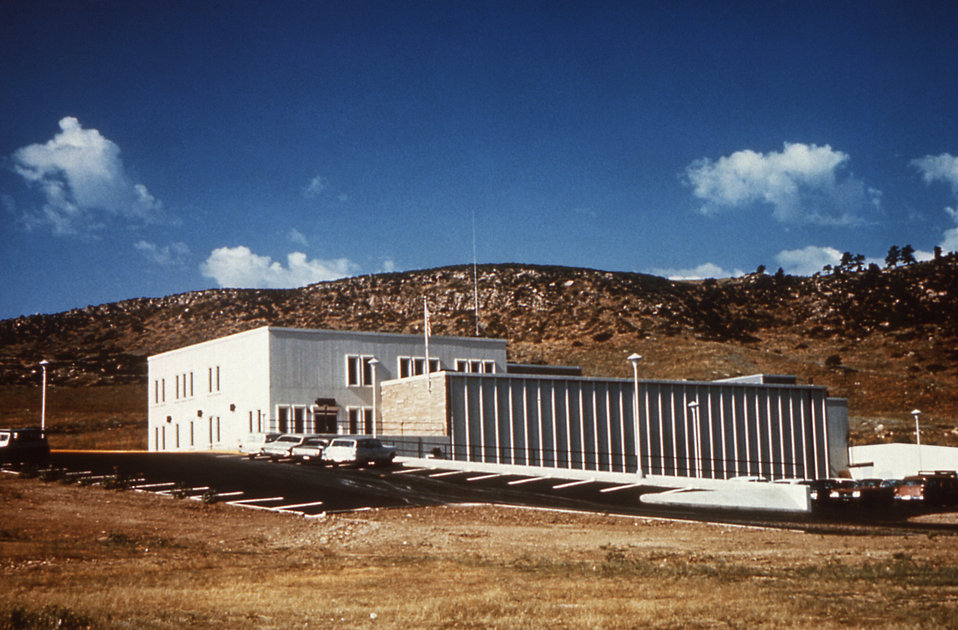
This 1979 image depicted a Centers for Disease Control (CDC) facility in Fort Collins, Colorado, which is the home of the CDC's Division of Vector-Borne Disease (DVBD).